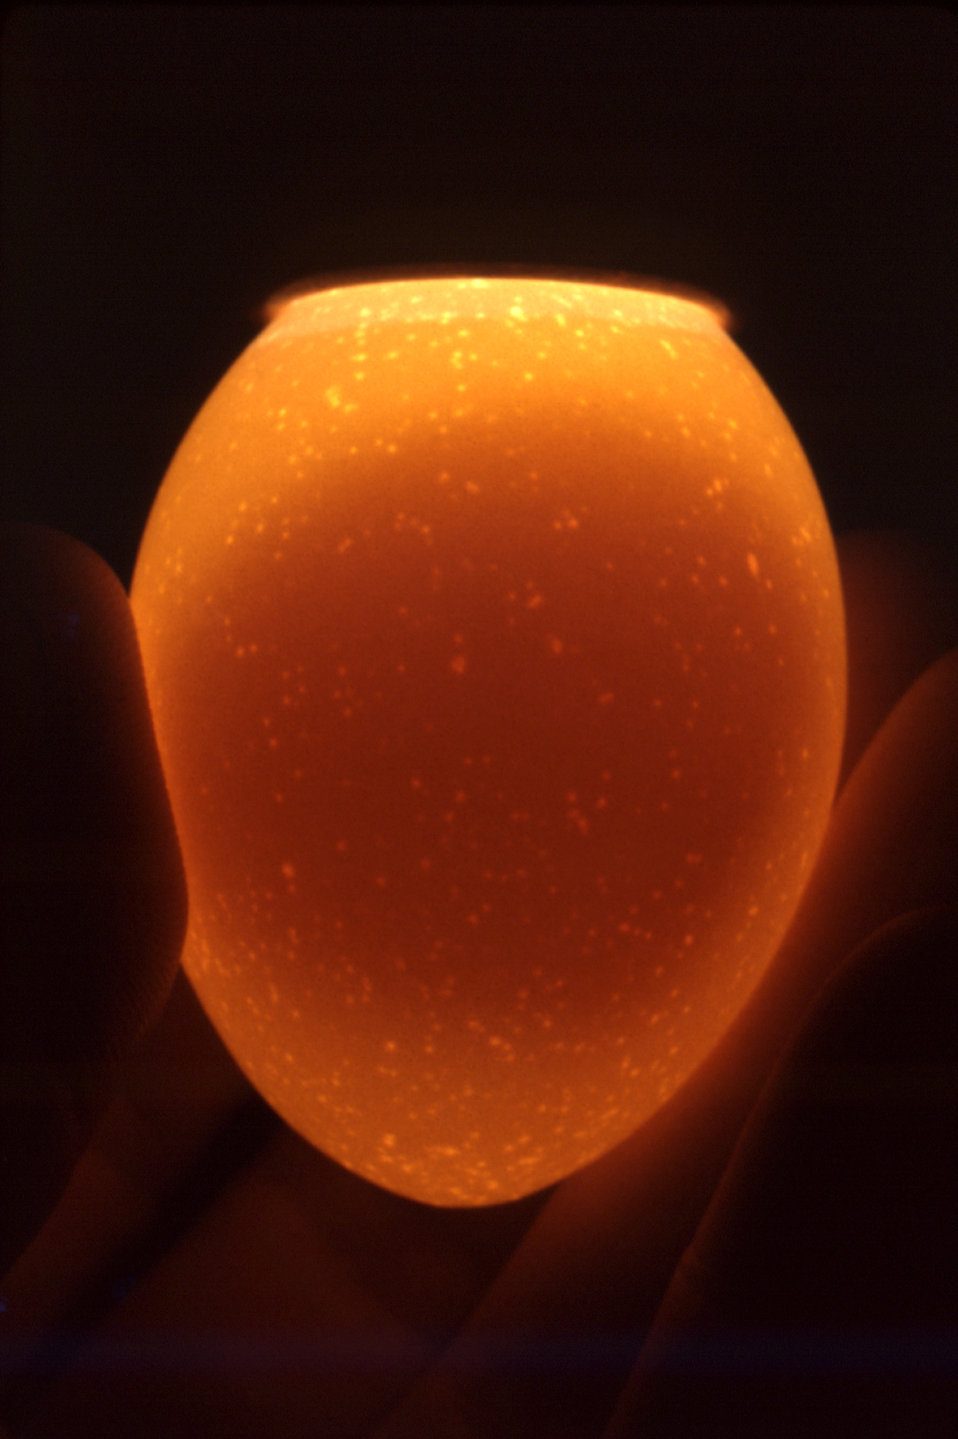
This image depicts the appearance of a non-fertile egg when observed using what is known as a 'candling' procedure. A very bright light is either placed behind the egg, such as was done throughout history by using a candle, hence the name, or employing more modern methods, using a powerful lamp placed against the broad end of the egg. In this way, the contents of the egg are revealed through the translucent shell.